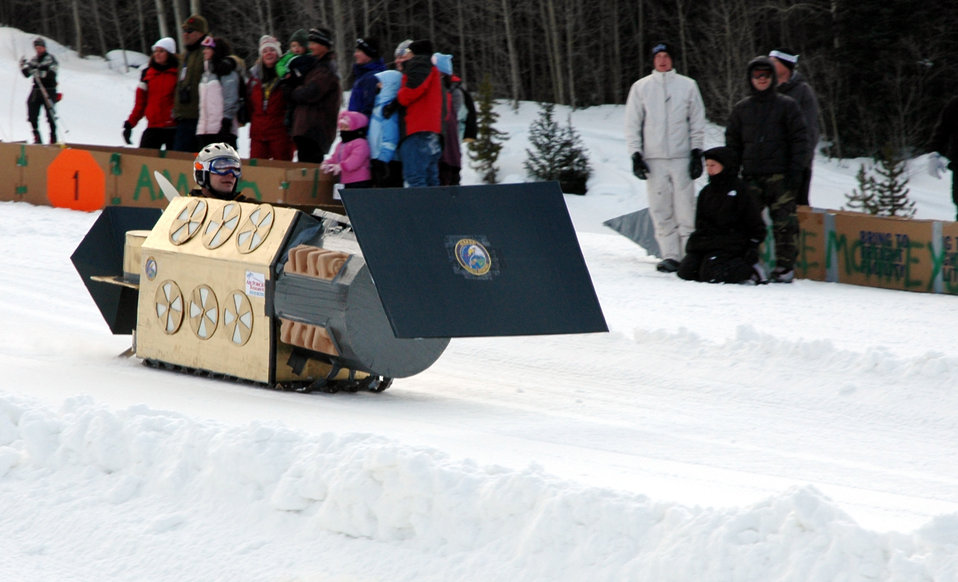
Best in Show

Team DMSP from Schriever Air Force Base, composed of Maj. Clif Stargardt, chief of Weapons and Tactics, 6th Space Operations Squadron, and Capt. Beth Stargardt, Plans and Analysis Officer, Joint Forces Component Command - Integrated Missile Defense Plans and Analysis Division, glide down the Discovery Slope Jan. 27 at Keystone, Colo. This was the pair’s first year attending SnoFest and first cardboard derby entry. It took them three weeks to design and build the sled, which won Best Engineered and Best in Show awards.